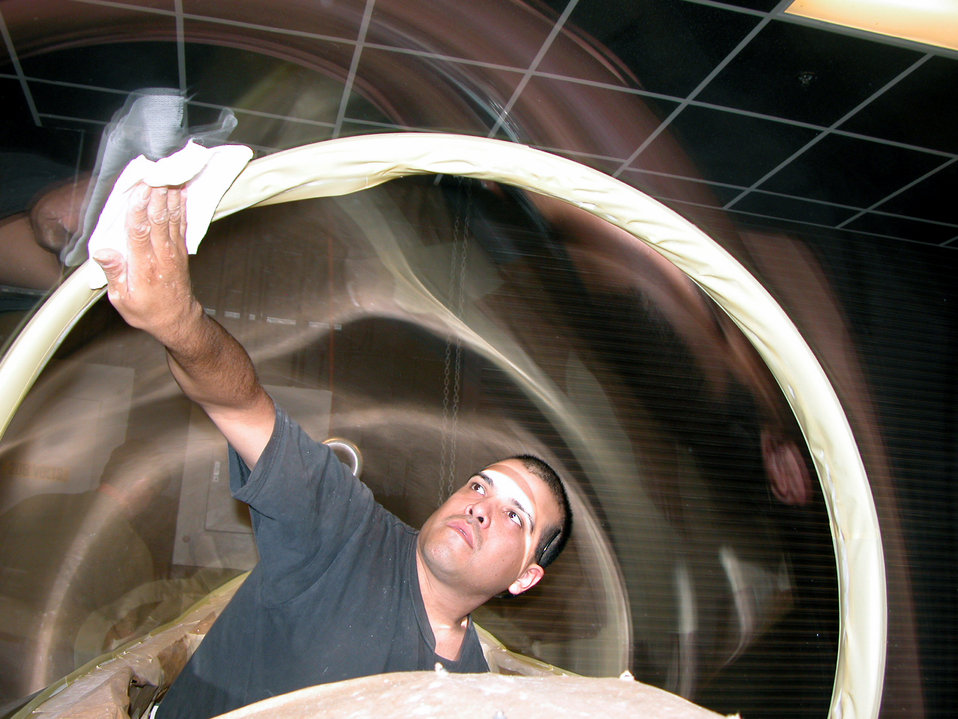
I do windows

ROBINS AIR FORCE BASE, Ga. -- Airman 1st Class Stanley Acevedo, from Seymour Johnson Air Force Base, N.C., polishes an F-15 Eagle canopy during training here.